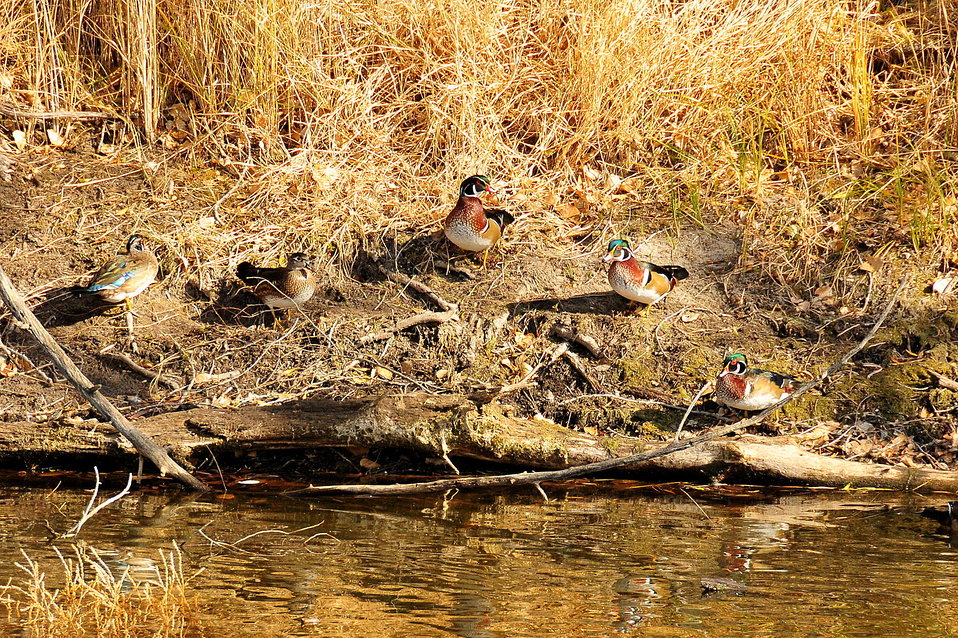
Wood duck flock

A flock of wood ducks gather on the banks of a stream in north central Nebraska on a fall afternoon.